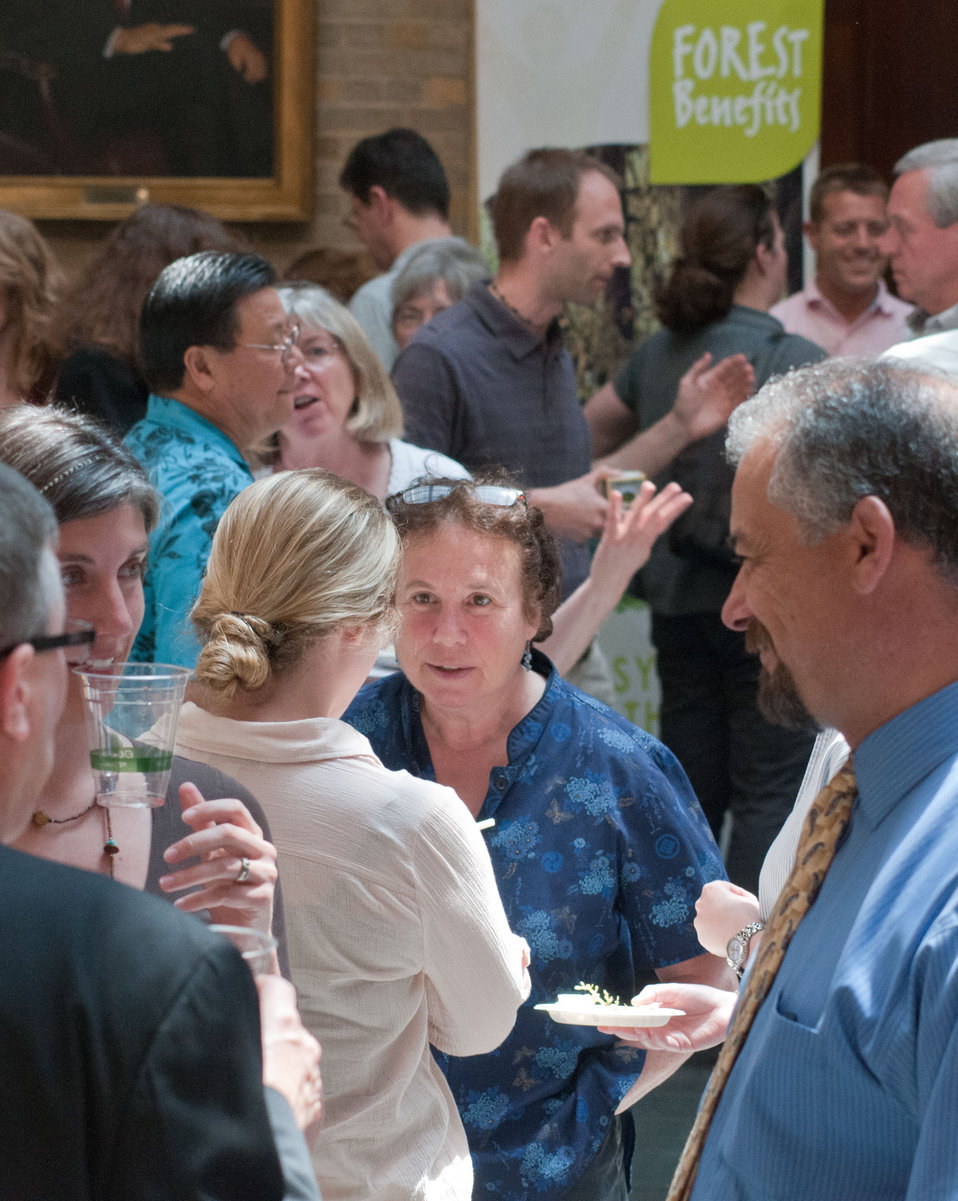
Guests at the International Year of Forests (IYOF) celebration on Friday, June 3, 2011 on the Patio of the Whitten Building, U.S.Department of Agriculture in Washington, DC.